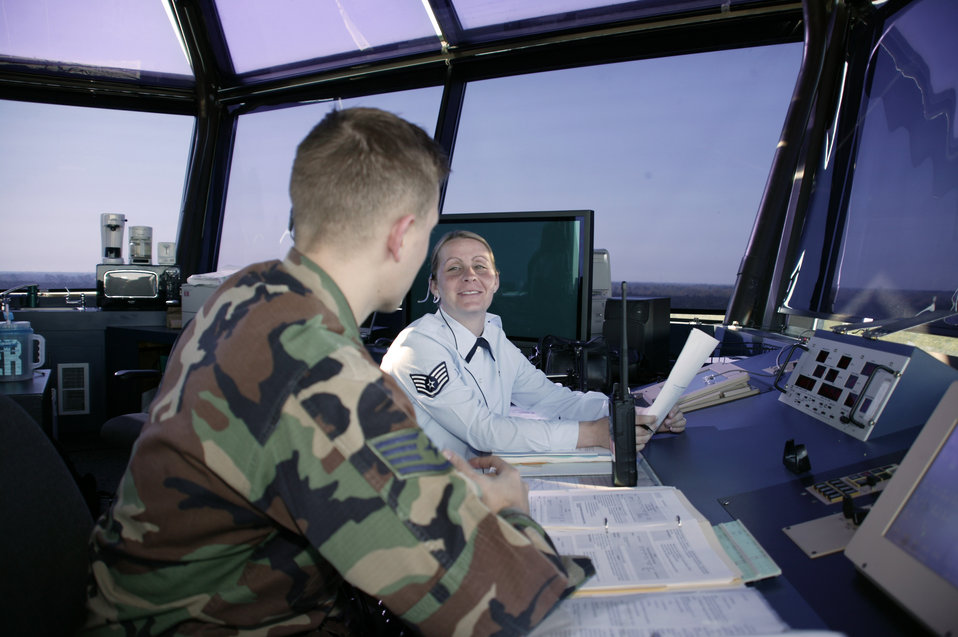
Airmen get view from tower

SHAW AIR FORCE BASE, S.C. - Staff Sgts. Garrick Christian (left) and Heather Beauchamp discuss flight patterns. They are air traffic controllers with the 20th Operations Support Squadron.